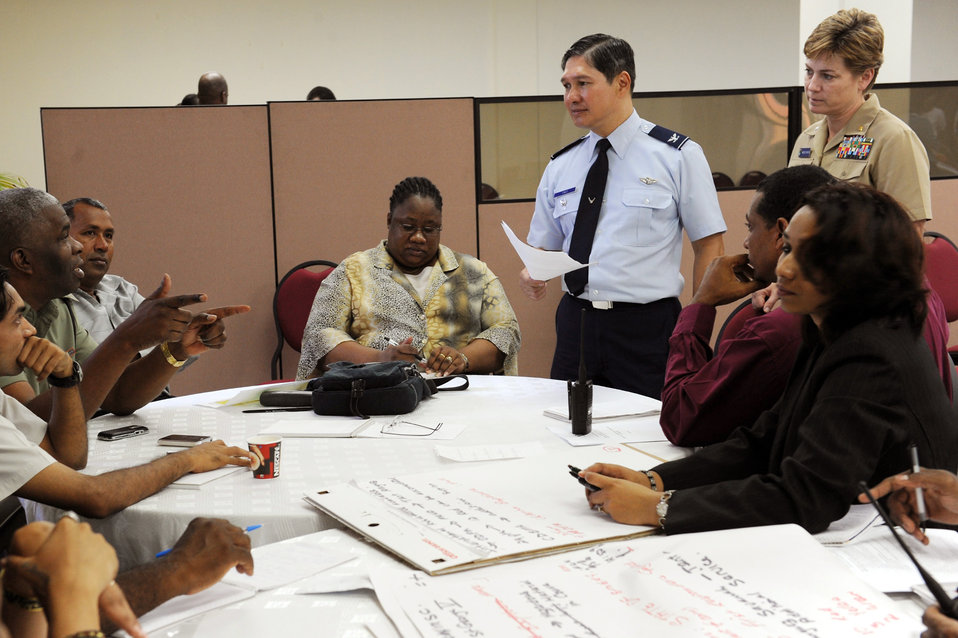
Trinidadian training concludes with counter-terrorism exercise

Local officials attend a disaster planning and mass casualty response class for primary care providers July 23, 2010, in Port of Spain, Trinidad and Tobago.